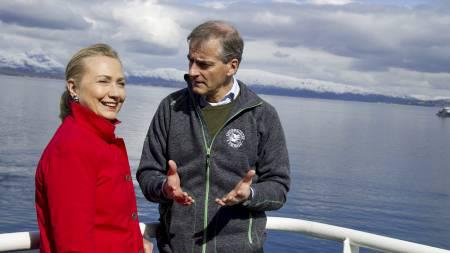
Secretary Clinton and Norwegian Foreign Minister Store Participate in an Arctic Research Vessel Tour

U.S. Secretary of State Hillary Rodham Clinton and Norwegian Foreign Minister Jonas Gahr Stoere participate in an Arctic research vessel tour in Tromso, Norway, on June 2, 2012.